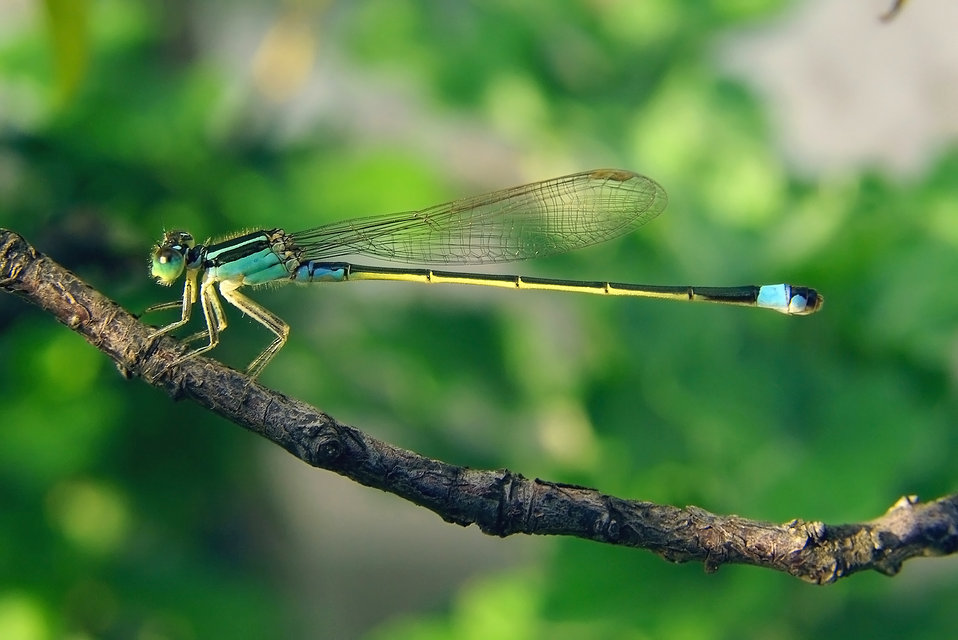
Ischnura senegalensis, Family Coenagrionidae Common Bluetail, a widespread damselfly in Africa, the Middle East, Southern and Eastern Asia. Français : Ischnura senegalensis, une Demoiselle très commune en Afrique, dans le Moyen Orient, en Asie du Sud et de l'Est. 日本語: アオモンイトトンボ Português: Ischnura senegalensis, uma libélula muito comum em África, no Médio Oriente e no sul e este da Ásia. Српски / srpski: вилински коњиц Ischnura senegalensis, широко распрострањен у Африци, Блиском и Средњем Истоку, као и Јужној и Источној Азији